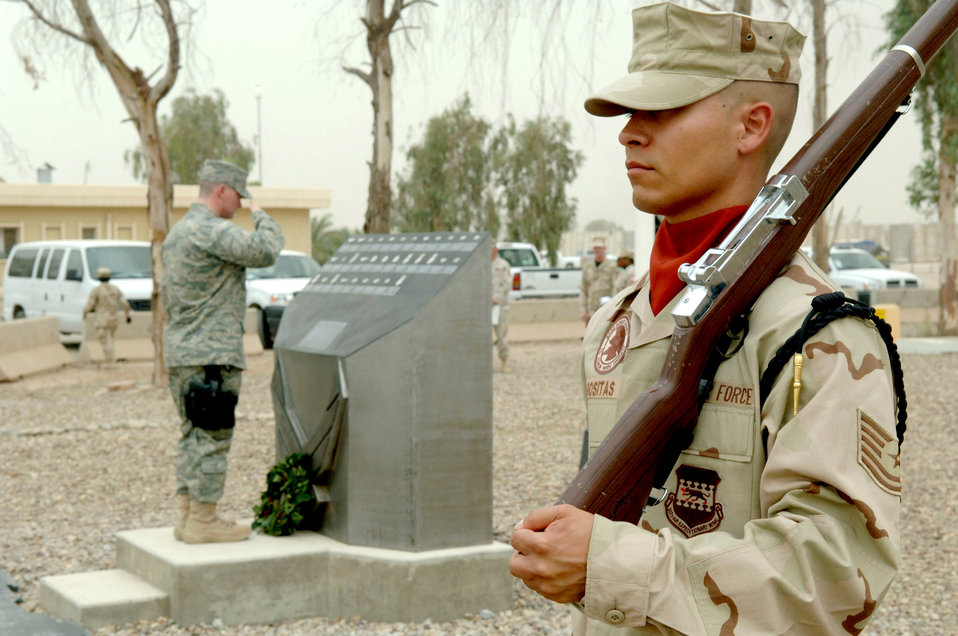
Honoring the fallen

Honor guard member Tech. Sgt. Richard Rositas stands watch at the Fallen Airman Memorial at Balad Air Base, Iraq, May 28 as an Airman pays tribute to the fallen. More than 300 Airmen gathered to pay tribute to servicemembers who made the ultimate sacrifice defending freedom.